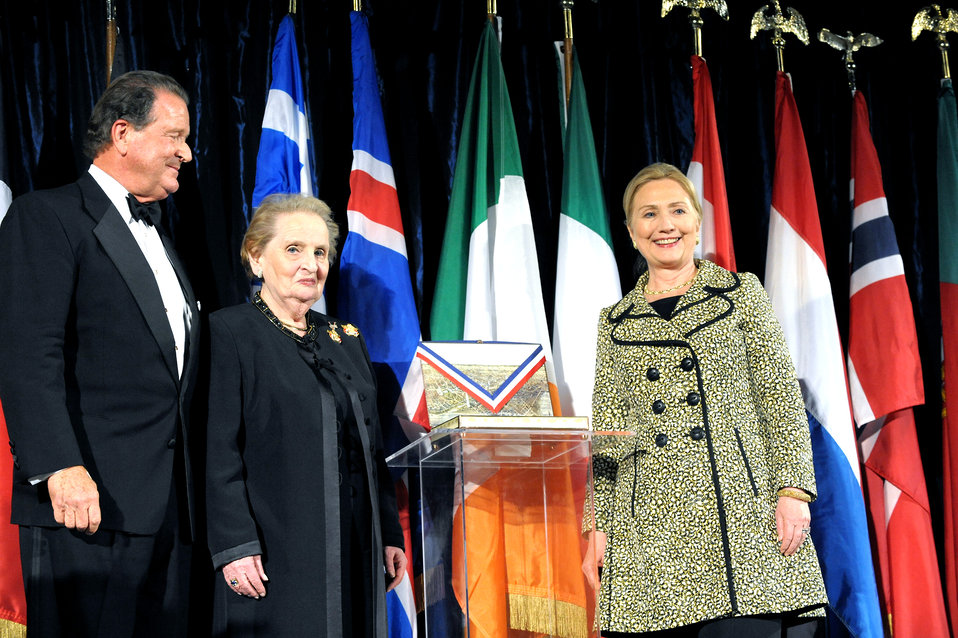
Secretary Clinton Receives the 2011 George C. Marshall Foundation Award

U.S. Secretary of State Hillary Rodham Clinton receives the 2011 George C. Marshall Foundation Award at the National Building Museum in Washington, D.C., on June 2, 2011.